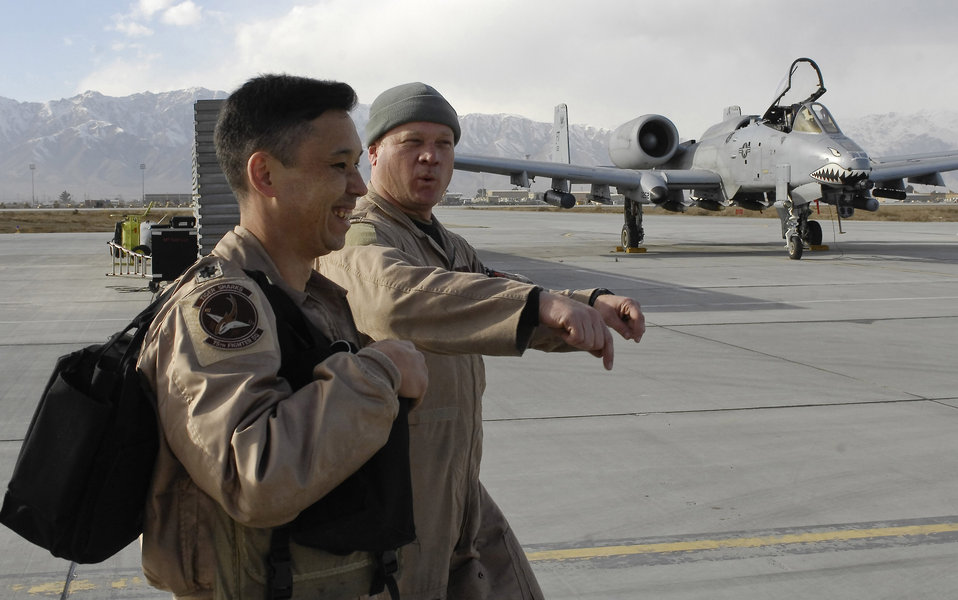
A-10 unit reaches 10,000-hour milestone

Lt. Col. Richard Piazza walks with Lt. Col. Sam Milam on their way to congratulate Col. Raymond Strasburger who flew on the unit's 10,000th combat flight hour mission Thunderbolt II after logging his unit's 10,000th combat flight during a single deployment rotation Feb. 24 at Bagram Airfield, Afghanistan. Members of the 75th Expeditionary Fighter Squadron arrived here in September for a four-month deployment, but was extended to six months. Colonel Piazza is the 75th EFS director of operations, and Colonel Milam is the 75th EFS commander. Colonel Strasburger is the 455th Expeditionary Operations Group commander.